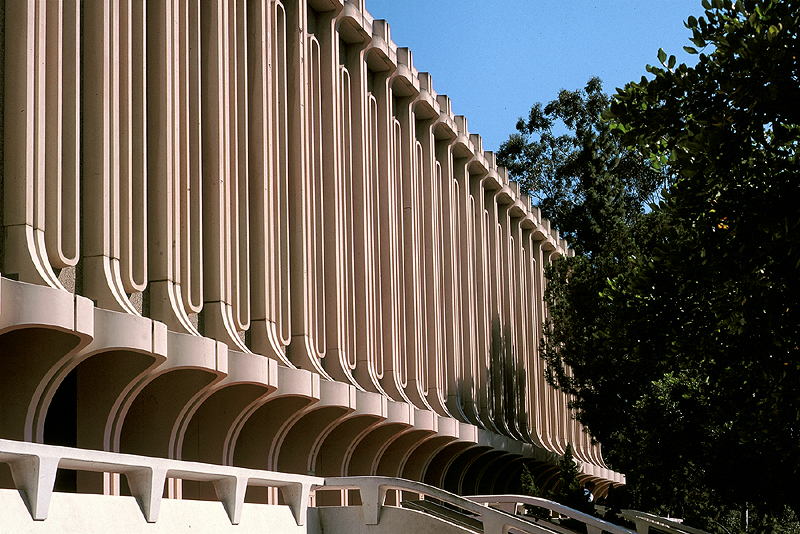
Jack Langson Library at UC Irvine is one of the eight original buildings on the campus, designed by architect William Pereira in 1965.